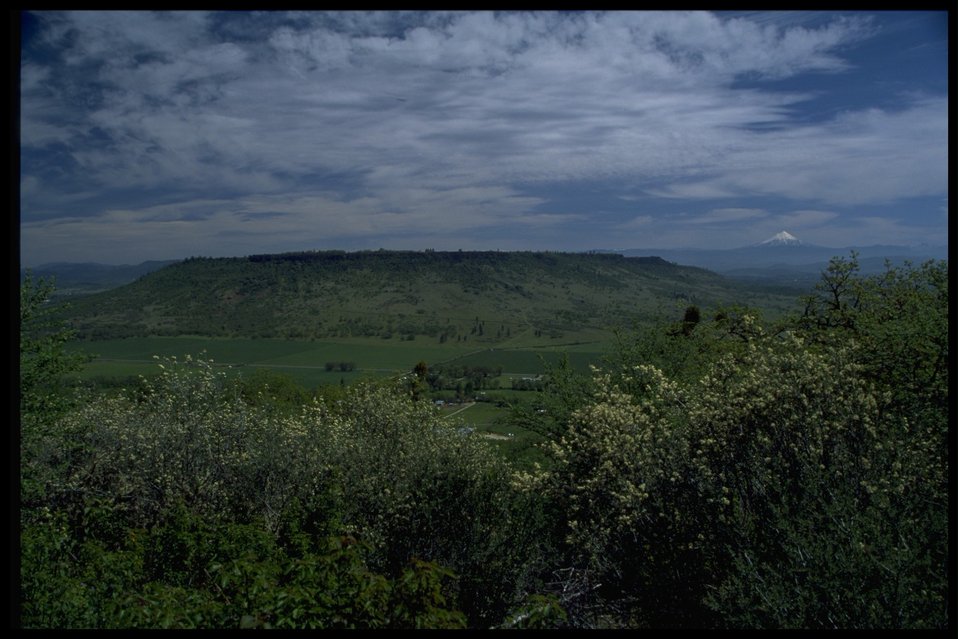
View of Upper Table Rock, Mt. McLoughlin in distance, Ceanothus cunetatus in foreground.